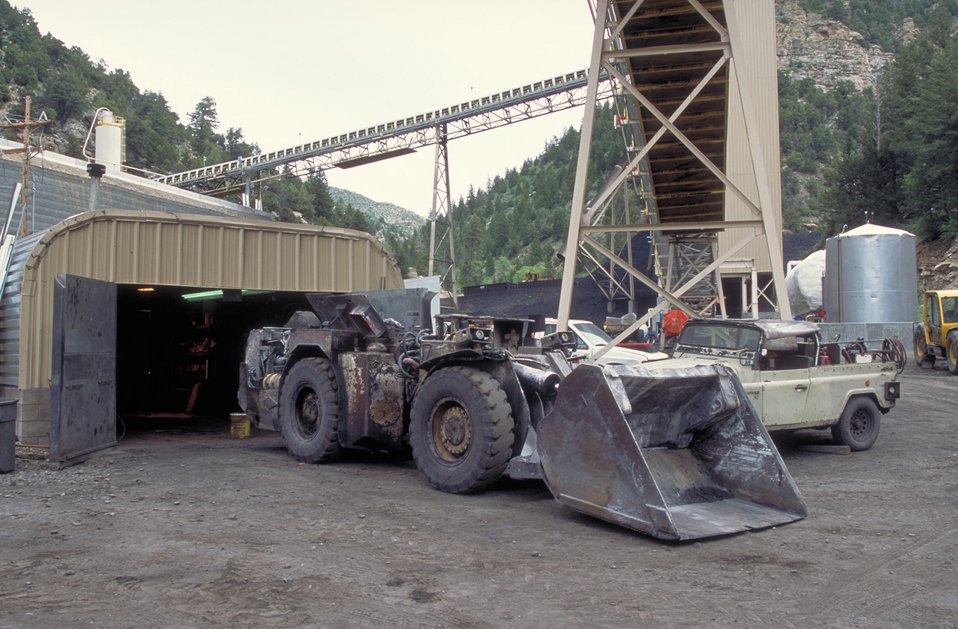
Coal production near Price, Utah.